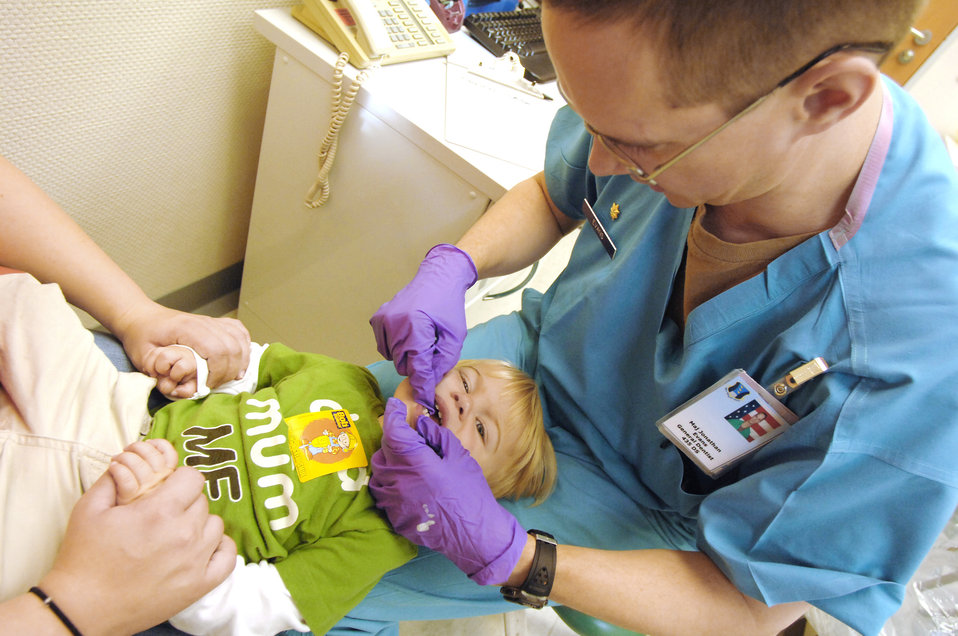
Ramstein dental techs emphasize early preventative care

Maj. (Dr.) Jonathan Evan flosses Hayden Voss' teeth during his first trip to the dentist Sept. 23, 2009, at Ramstein Air Base, Germany. Dentists at the 86th Dental Squadron see hundreds of children each year from the Kaiserslautern Military Community. For the initial visit, Doctor Evans emphasizes the importance of parentally involvement and the child's overall dental well-being. Doctor Evan is an 86th Medical Group general dentist.